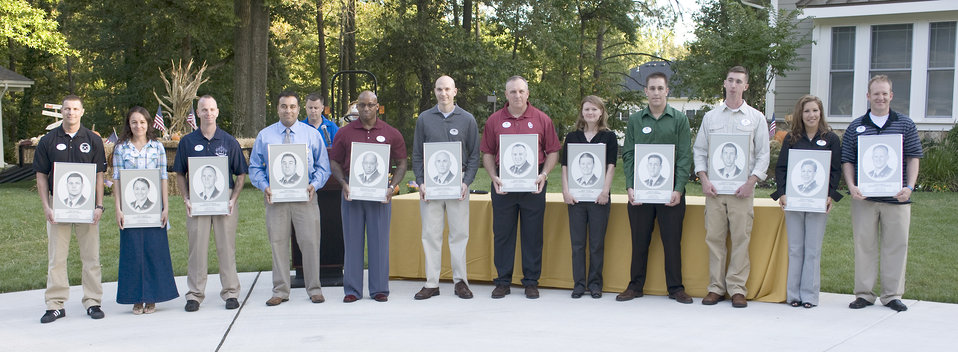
Social starts week celebrating outstanding Airmen

The 12 Outstanding Airmen of the Year hold their awards Sept. 11, 2010, at Airey House on Andrews Air Force Base, Md. Chief Master Sgt. of the Air Force James Roy hosted a social in honor of the Airmen. This awards program began in 1956. Each year the program recognizes 12 enlisted Airmen for their superior leadership, job performance, community involvement and personal achievements.